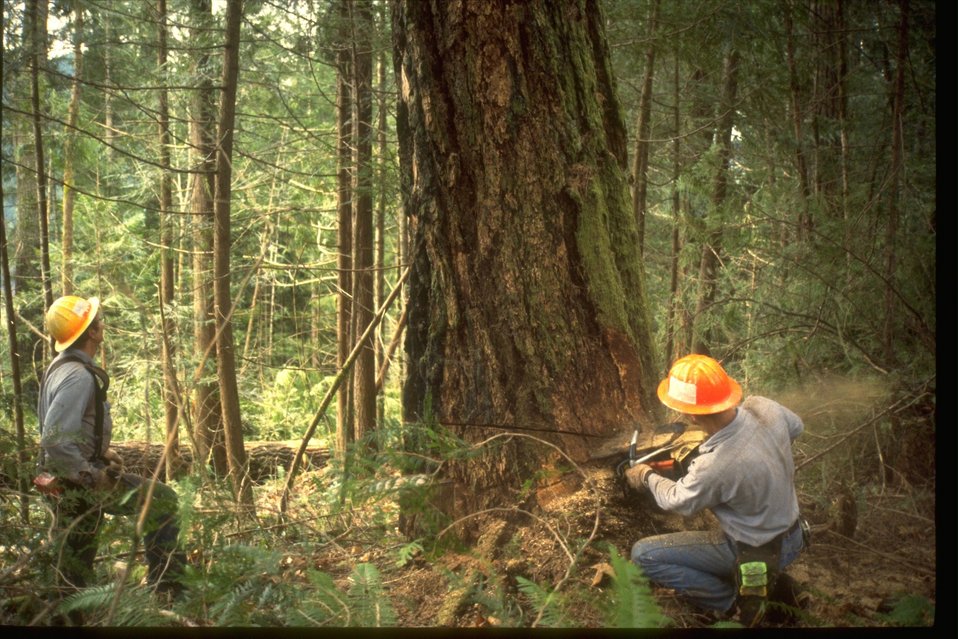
Douglas Fir falling down.